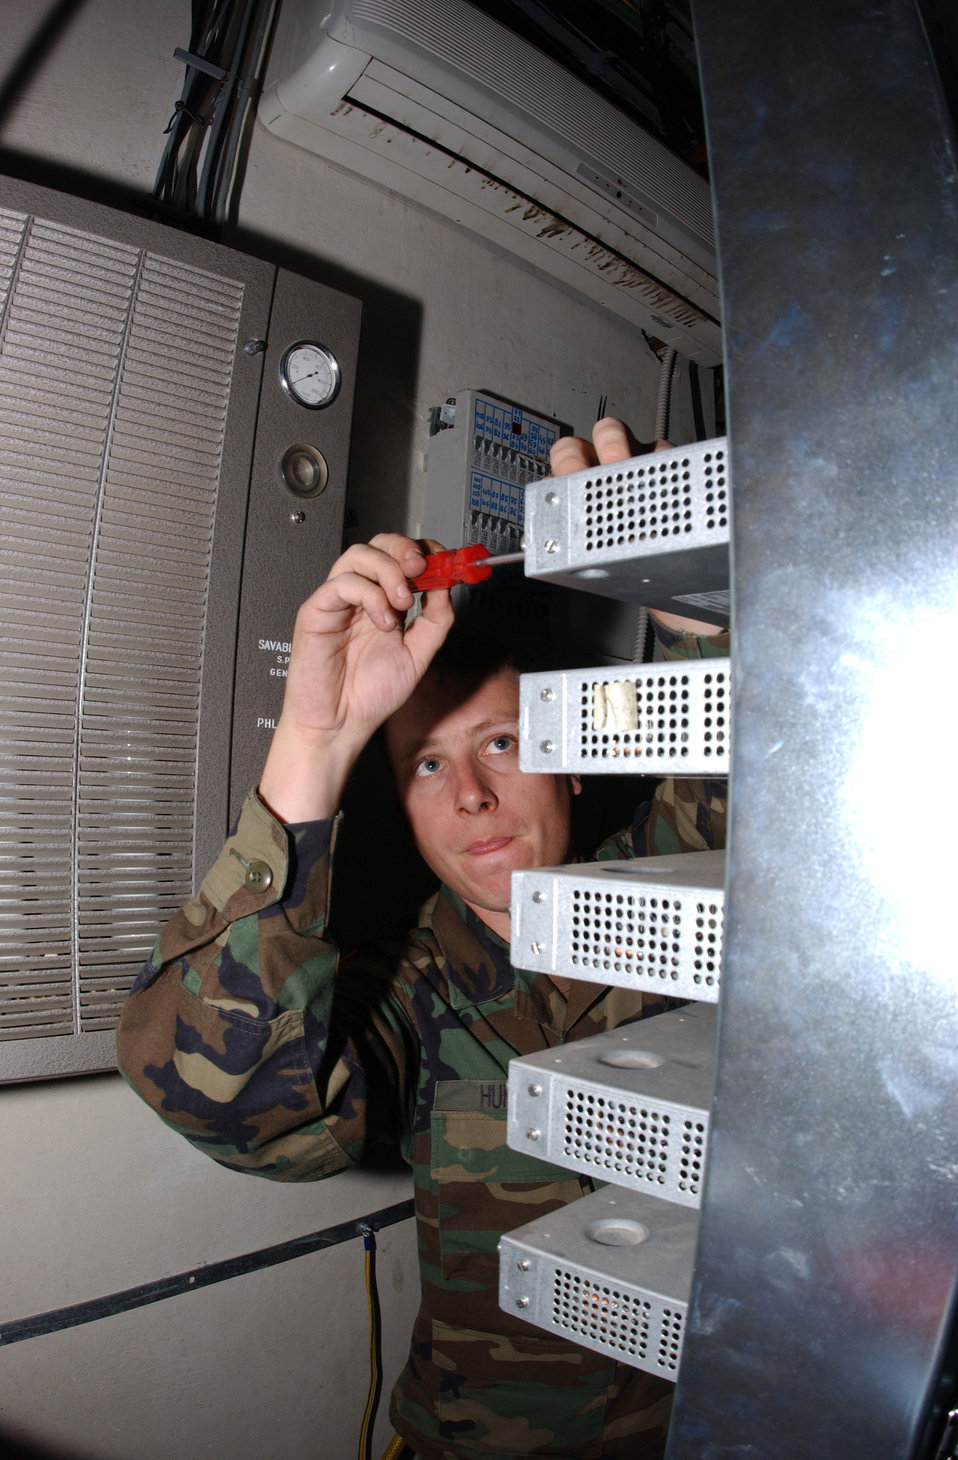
Operation Joint Forge

CAMP BUTMIR, Bosnia-Herzegovina -- Staff Sgt. Ian V. Huntley begins the process of removing a digital line of sight unit from a communications tower near here. Sergeant Huntley is assigned to the NATO Stabilization Forces.